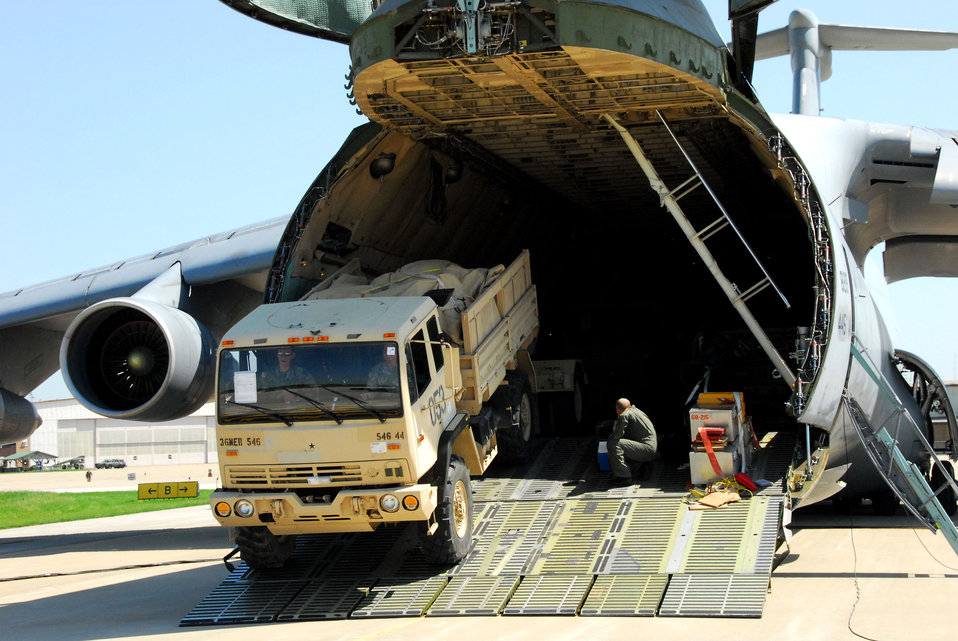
C-5 equals max capacity

Army personnel off-load trucks May 12 from a C-5 Galaxy at Hulman Field in Terre Haute, Ind., in support of Exercise Ardent Sentry. Ardent Sentry is designed to hone coordination between the Department of Defense as well as federal, state, local and private agencies in a series of challenging scenarios ranging from natural disasters to terrorist incidents.